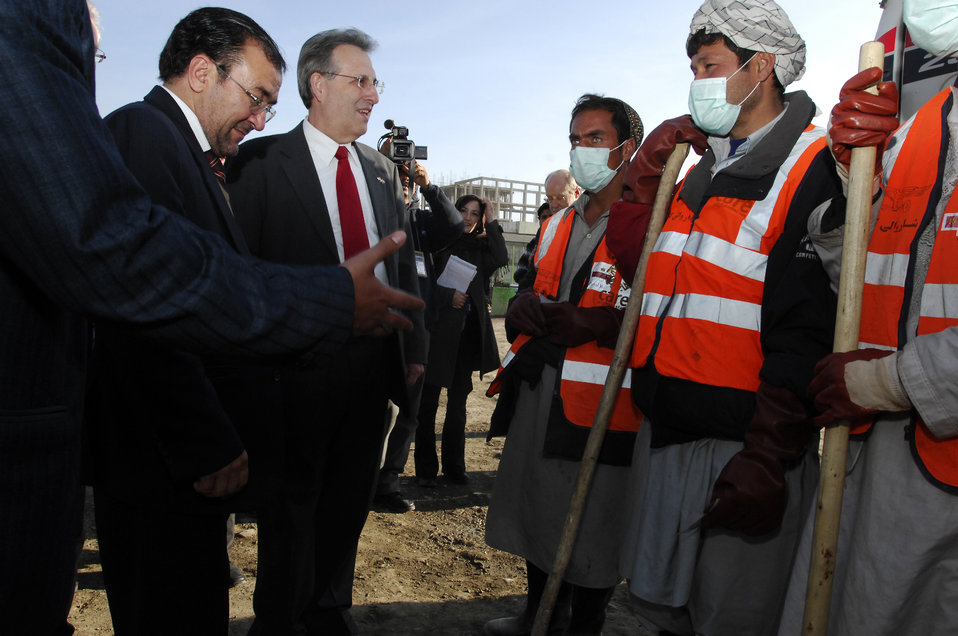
Care81